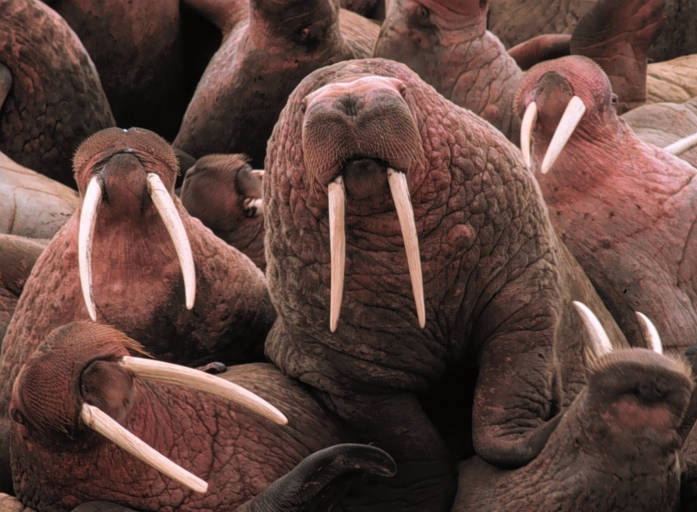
Pacific Walrus at Cape Peirce

Pacific Walrus utilize beaches around Cape Peirce as haulout areas on which to rest between feeding forays. These beaches are surrounded by sheer cliffs affording the walrus protection from predators.